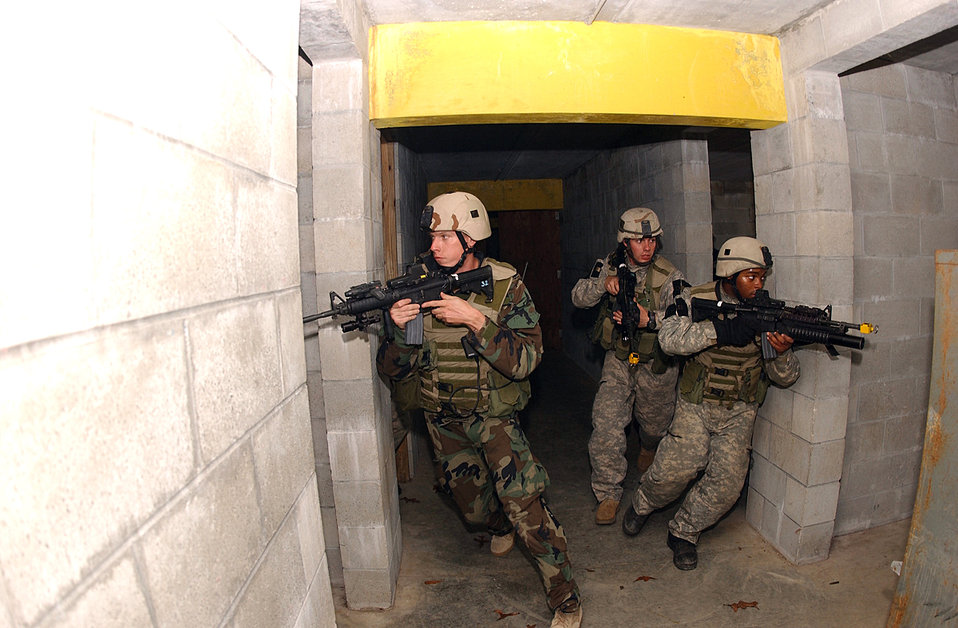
Security forces training

Airmen prepare to enter an abandoned house during a pre-deployment exercise at Camp Blanding, Fla., Wednesday, Feb. 15, 2006. The training helps Airmen hone their skills through realistic combat scenarios. The Airmen are with the 824th Security Forces Squadron at Moody Air Force Base, Ga.